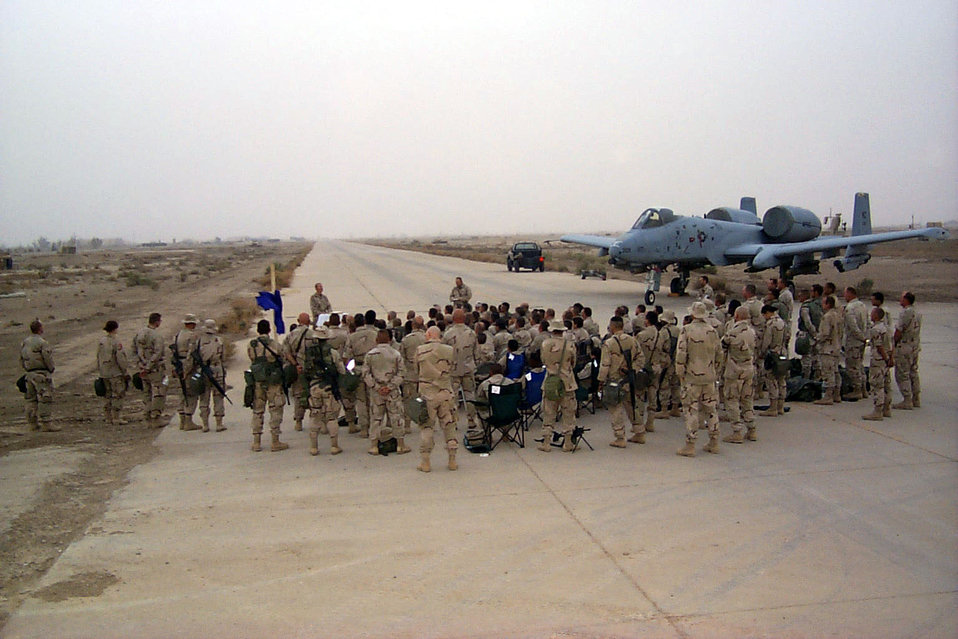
Easter at Tallil

OPERATION IRAQI FREEDOM -- About 75 airmen and soldiers gather at Tallil Air Base, Iraq, for an Easter sunrise service on the flightline April 20. Deployed chaplains offer spiritual and religious services and help increase the morale of warfighters.